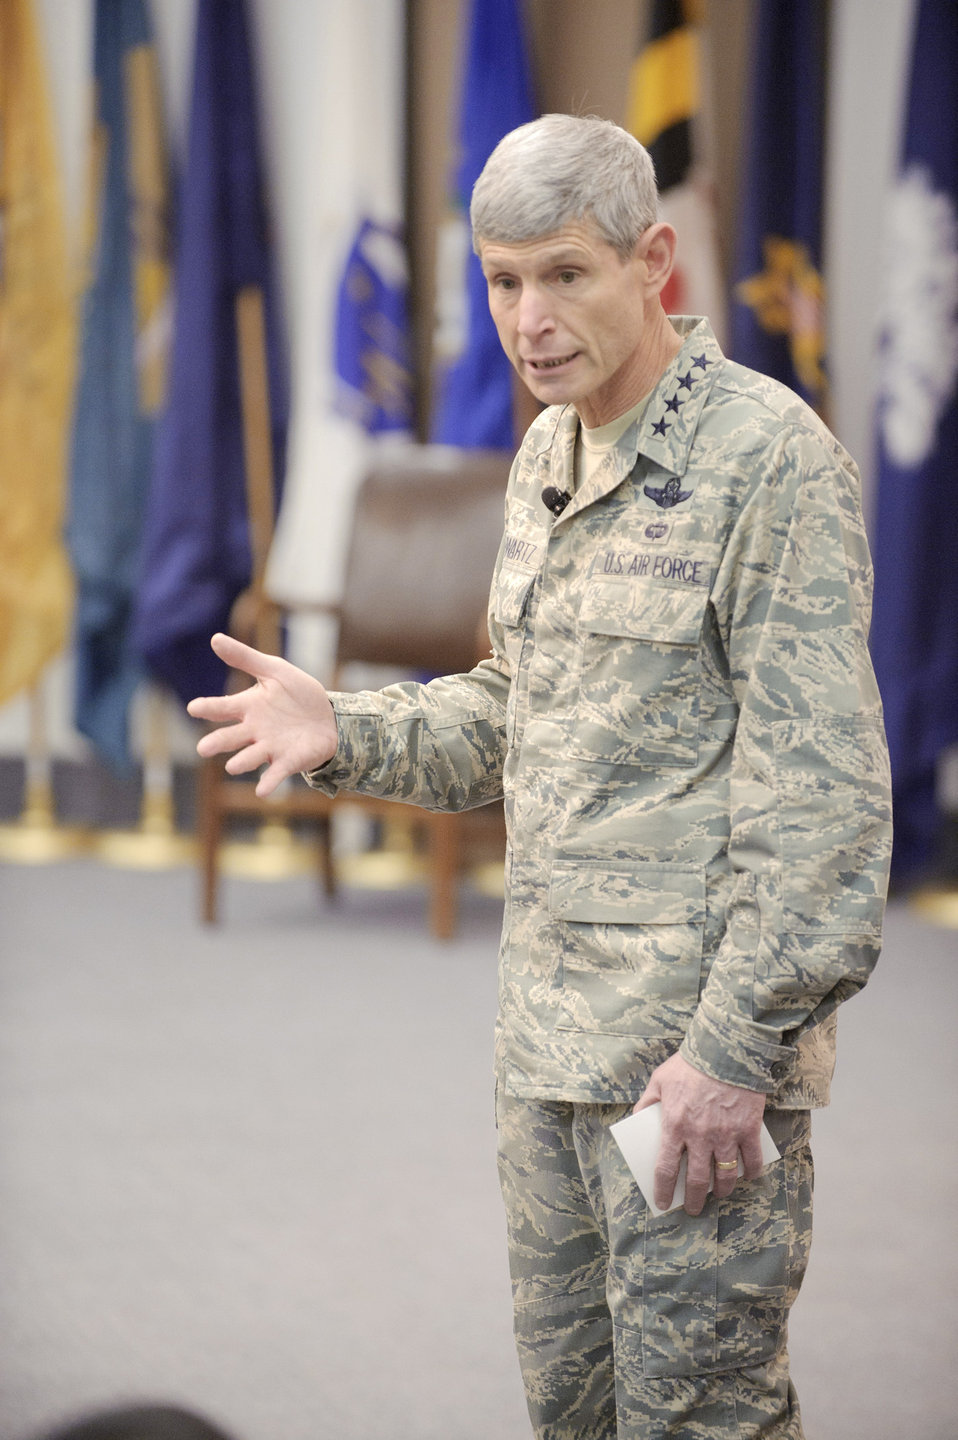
Air Force Chief of Staff visits USAFSAM

Air Force Chief of Staff Gen. Norton Schwartz praises faculty, staff and students of the U. S. Air Force School of Aerospace Medicine on their contributions to keeping military members fit, saving lives of wounded warriors and supporting their recovery. General Schwartz was visiting the school May 13, 2010, at Brooks City-Base in San Antonio.